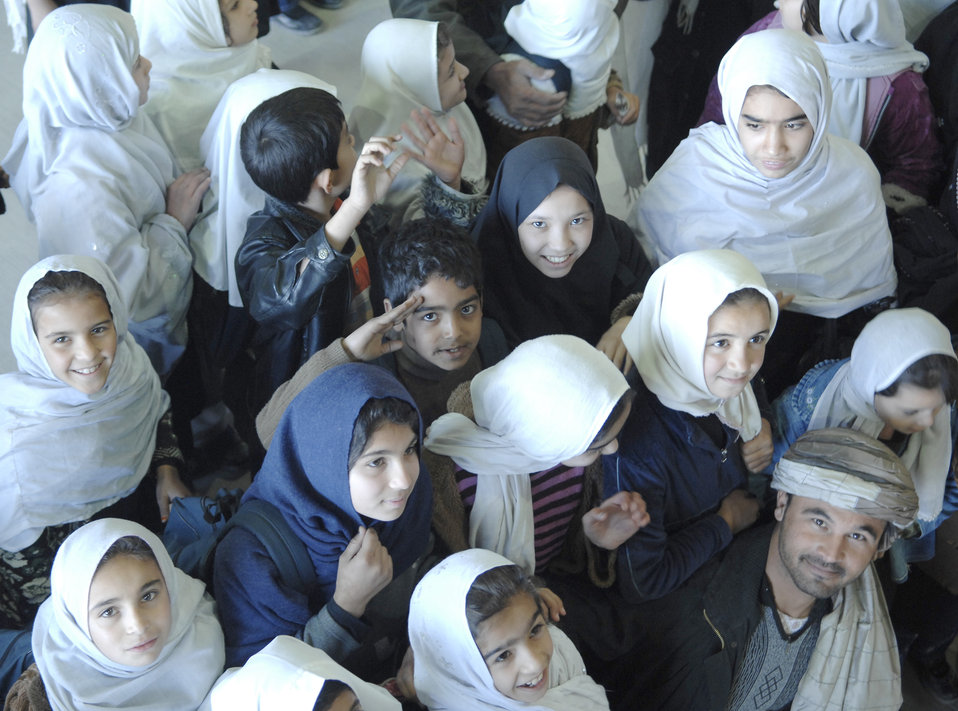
Afghan children visit Kandahar, see partnership between Afghans, coalition forces

A young Afghan boy renders a salute while standing in a crowd of fellow students and a teacher Dec. 31, 2009, at Kandahar Airfield, Afghanistan. Students were able to see examples of the partnership between coalition forces and Afghan military members working together at the Afghan National Army Air Corps hangar.